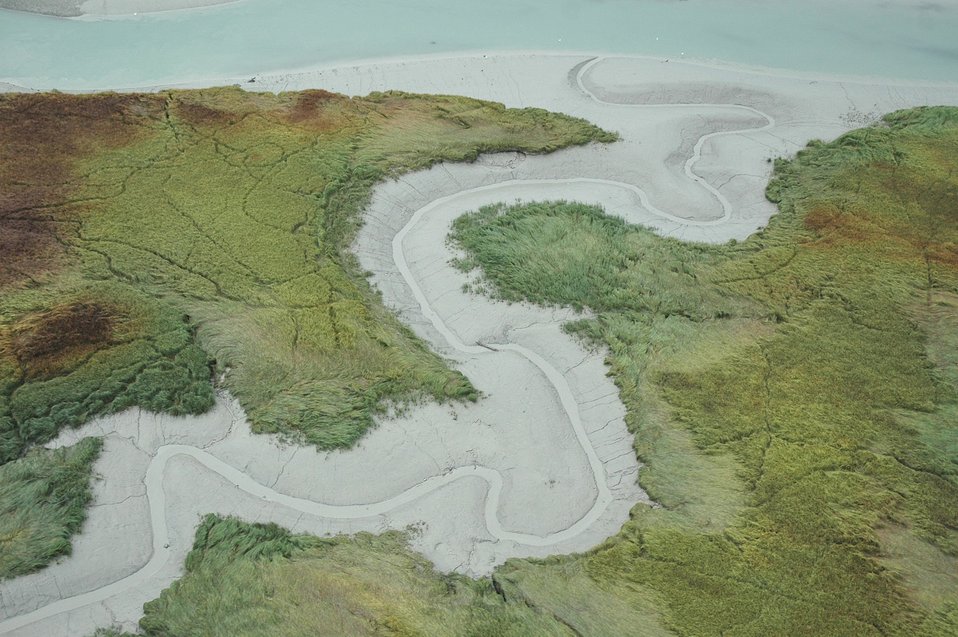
Aerial photograph. A gray mud meandering tidal stream emptying into Taku Inlet. Curious patterns looking like random trails cover the adjoining grassland.